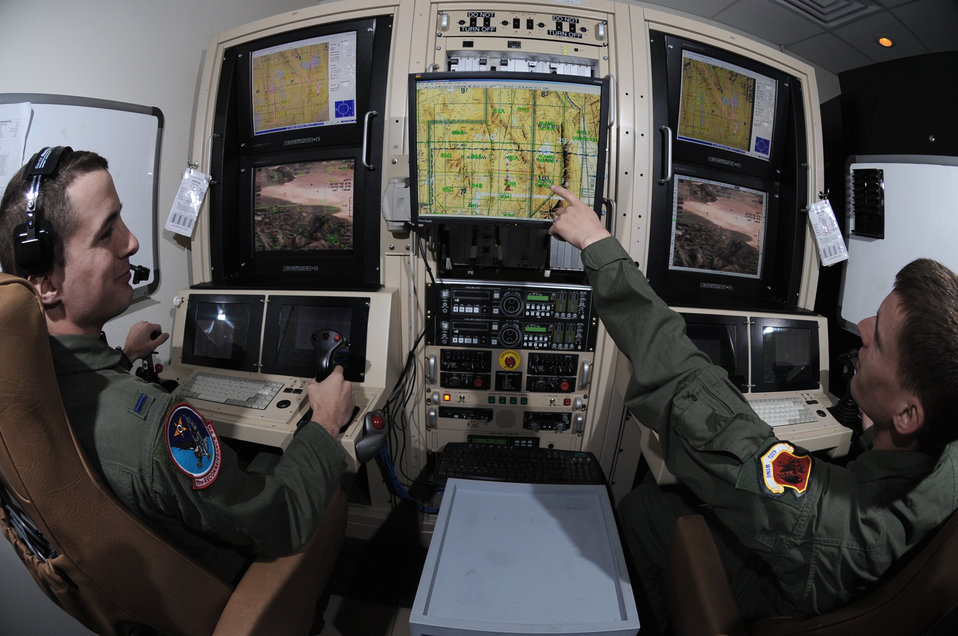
Training for unmanned aircraft systems

Airman 1st Class Caleb Force assists 1st Lt. Jorden Smith in locating simulated targets during an MQ-1 Predator training mission April 22 at Creech Air Force Base, Nev. Airman Force is a Predator sensor operator and Lieutenant Smith is a Predator pilot. Both are assigned to the 11th Reconnaissance Squadron.